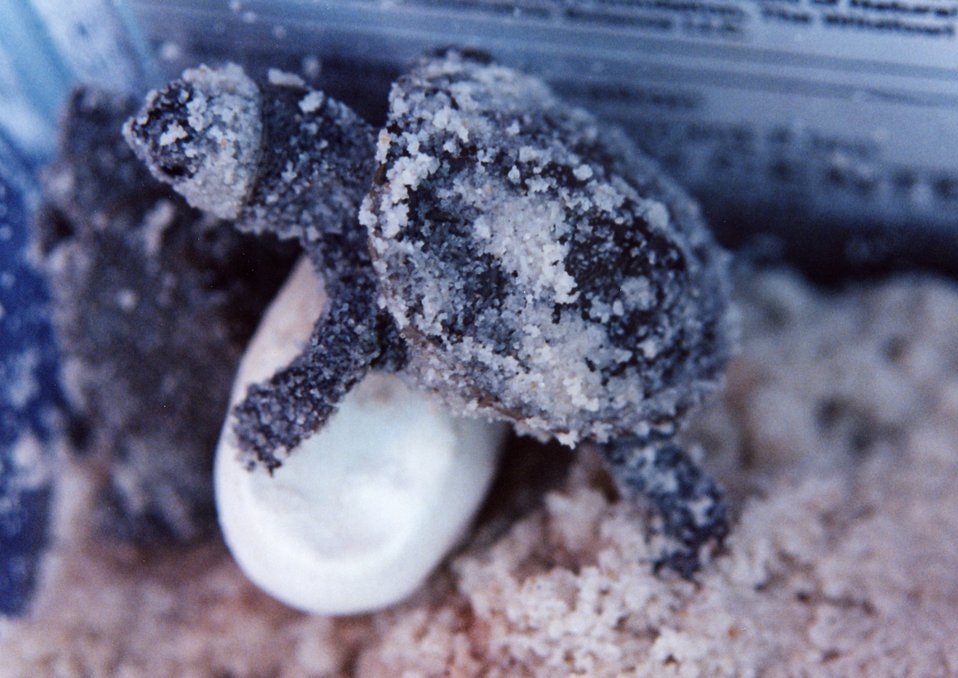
Newly hatched diamondback terrapin.